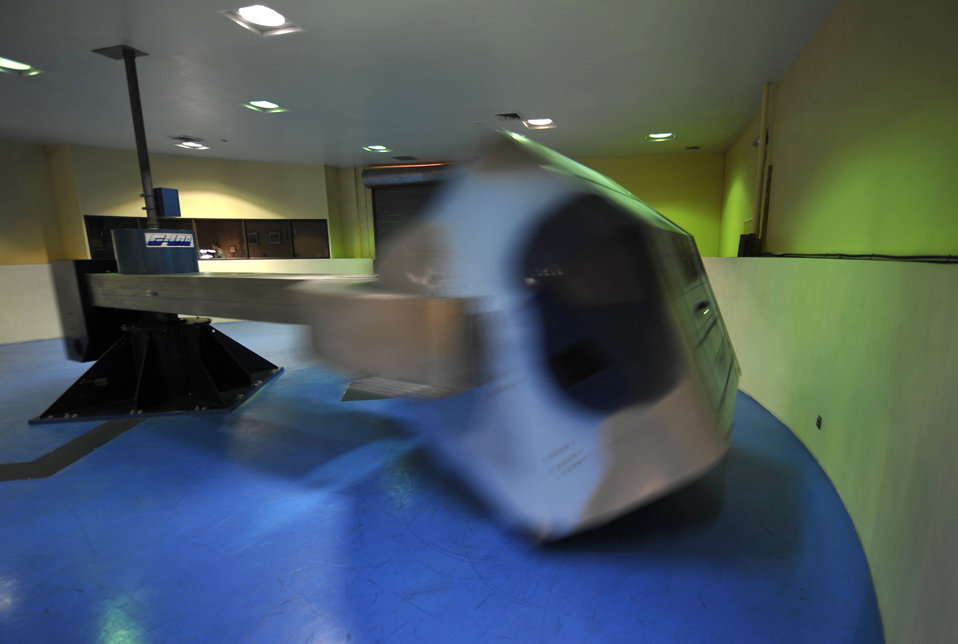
Centrifuge takes last spin

Members of the Physiological Training Center concluded 22 years of centrifuge training with its final spin Oct. 27, 2010, at Holloman Air Force Base, N.M. Operated by the U.S. Air Force School of Aerospace Medicine, the centrifuge was used as a training device to expose pilots to a high level of G-forces -- a measurement of an object's acceleration -- which aircrews encounter in high-performance aircraft. Upon its last spin, Holloman's centrifuge had been used to train nearly 32,000 students, including service members from all branches, North Atlantic Treaty Organization troops and members of allied forces.